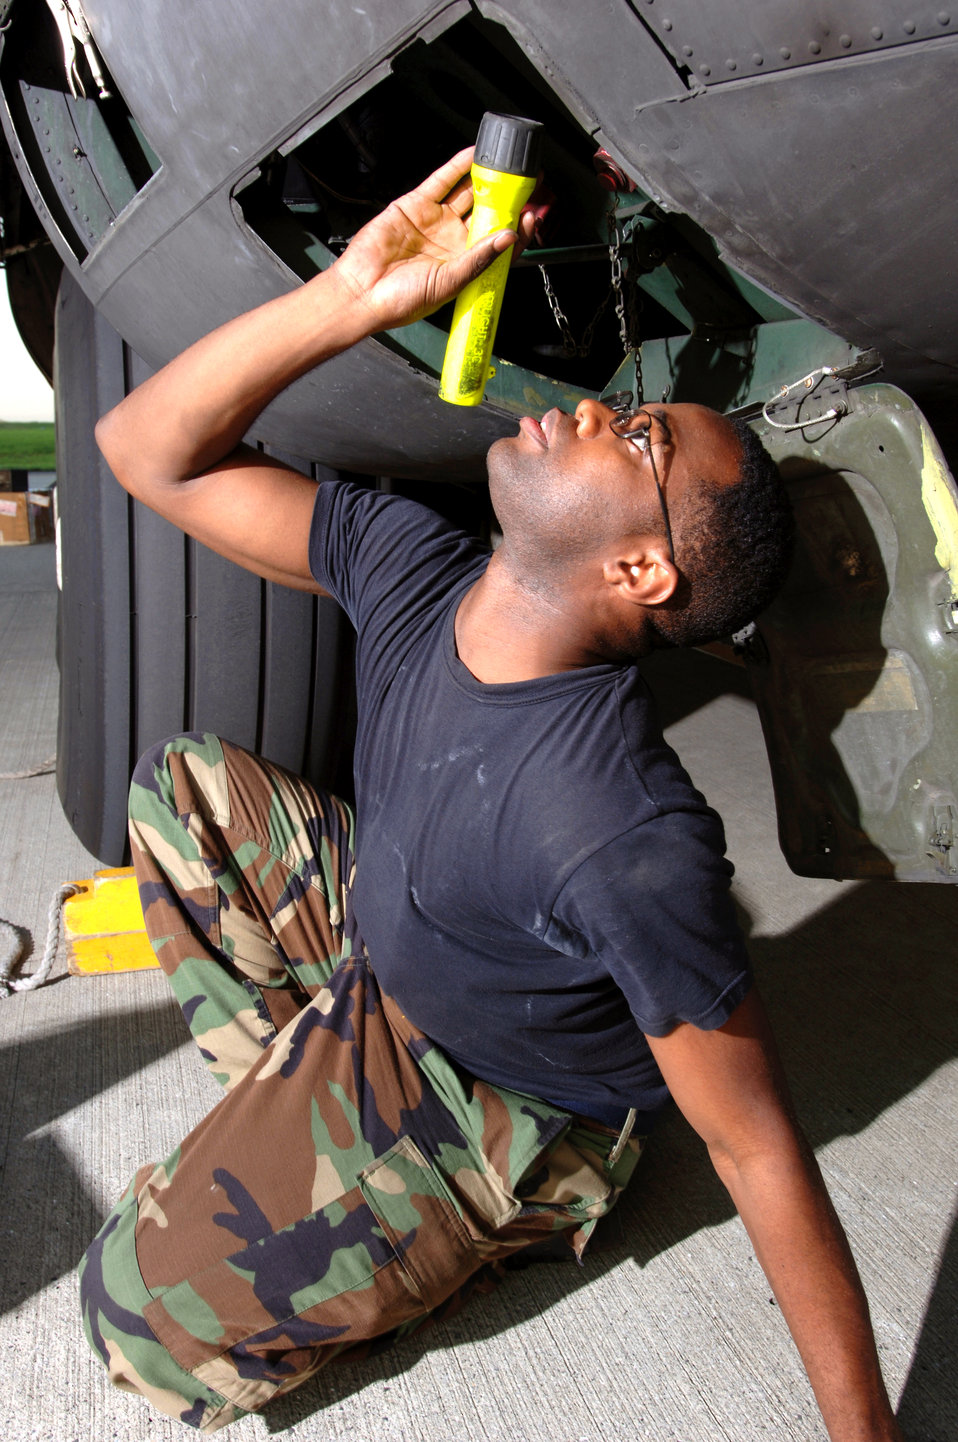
Checkin' things out

YOKOTA AIR BASE, Japan -- Staff Sgt. Anthony Page performs a routine inspection of a C-130 Hercules here. Airmen with the 374th Maintenance Squadron here inspect, service and repair assigned and in-transit C-130 aircraft. Sergeant Page is a communications navigation technician with the squadron.